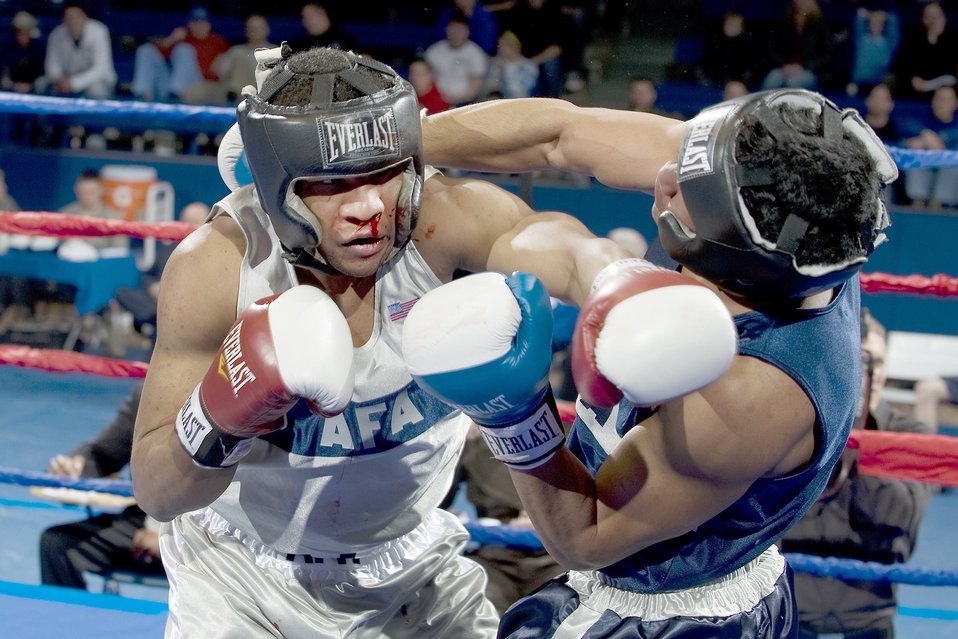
Academy Open Boxing Championship

Junior Will Keuchler connects with a straight left hand to the face of opponent and fellow junior Reggie Howard during their Wing Open Championship boxing match March 5, 2010, at the U.S. Air Force Academy's Clune Arena in Colorado. Keuchler went on to win the 185-pound weight class bout by decision.